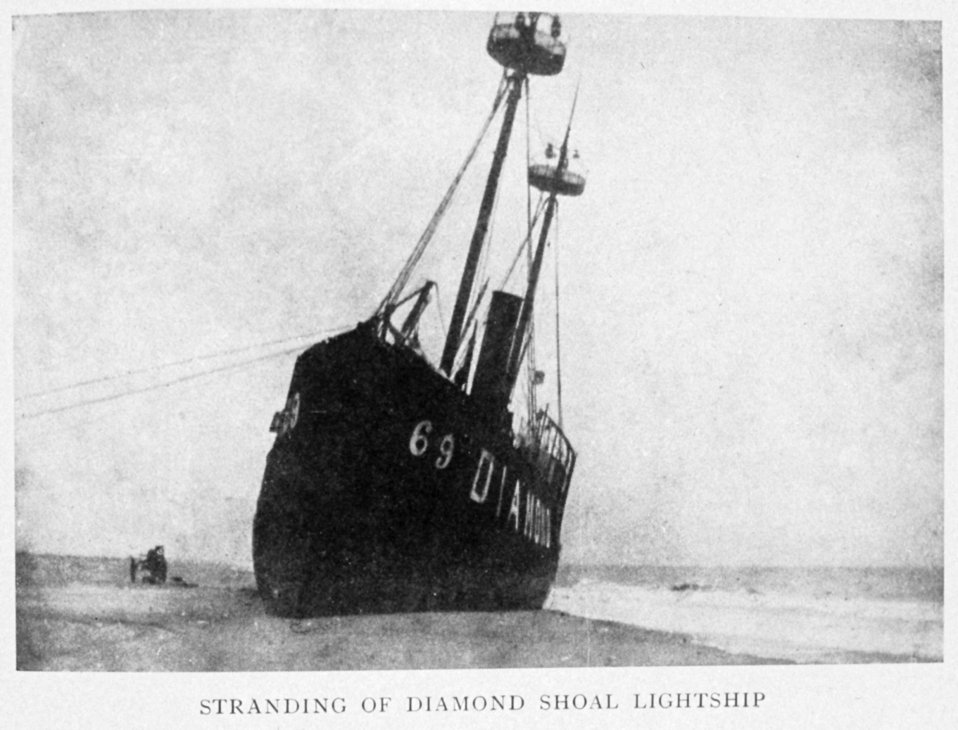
Stranding of Diamond Shoal Lightship. Near Cape Hatteras. In: 'Lighthouses and Lightships of the United States' by George R. Putnam, p. 96, 1917. Houghton Mifflin and Company, Boston. Library Call No. 527.7 P98.